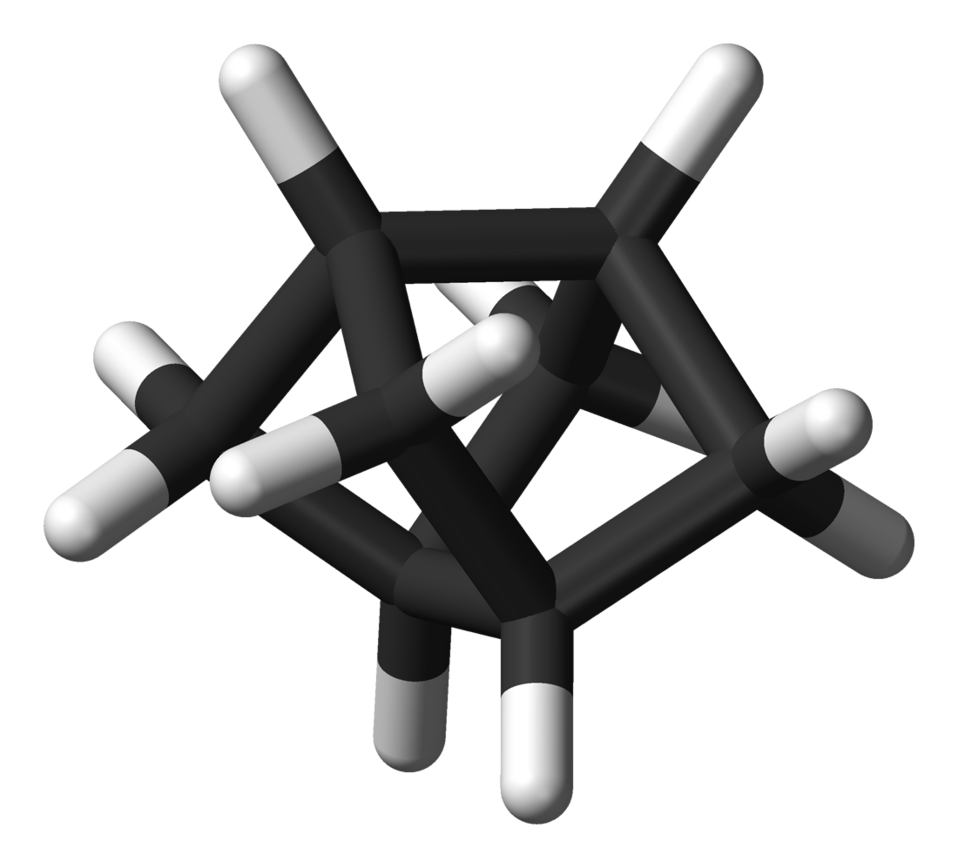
(CH2)4(CH)4-3D-sticks